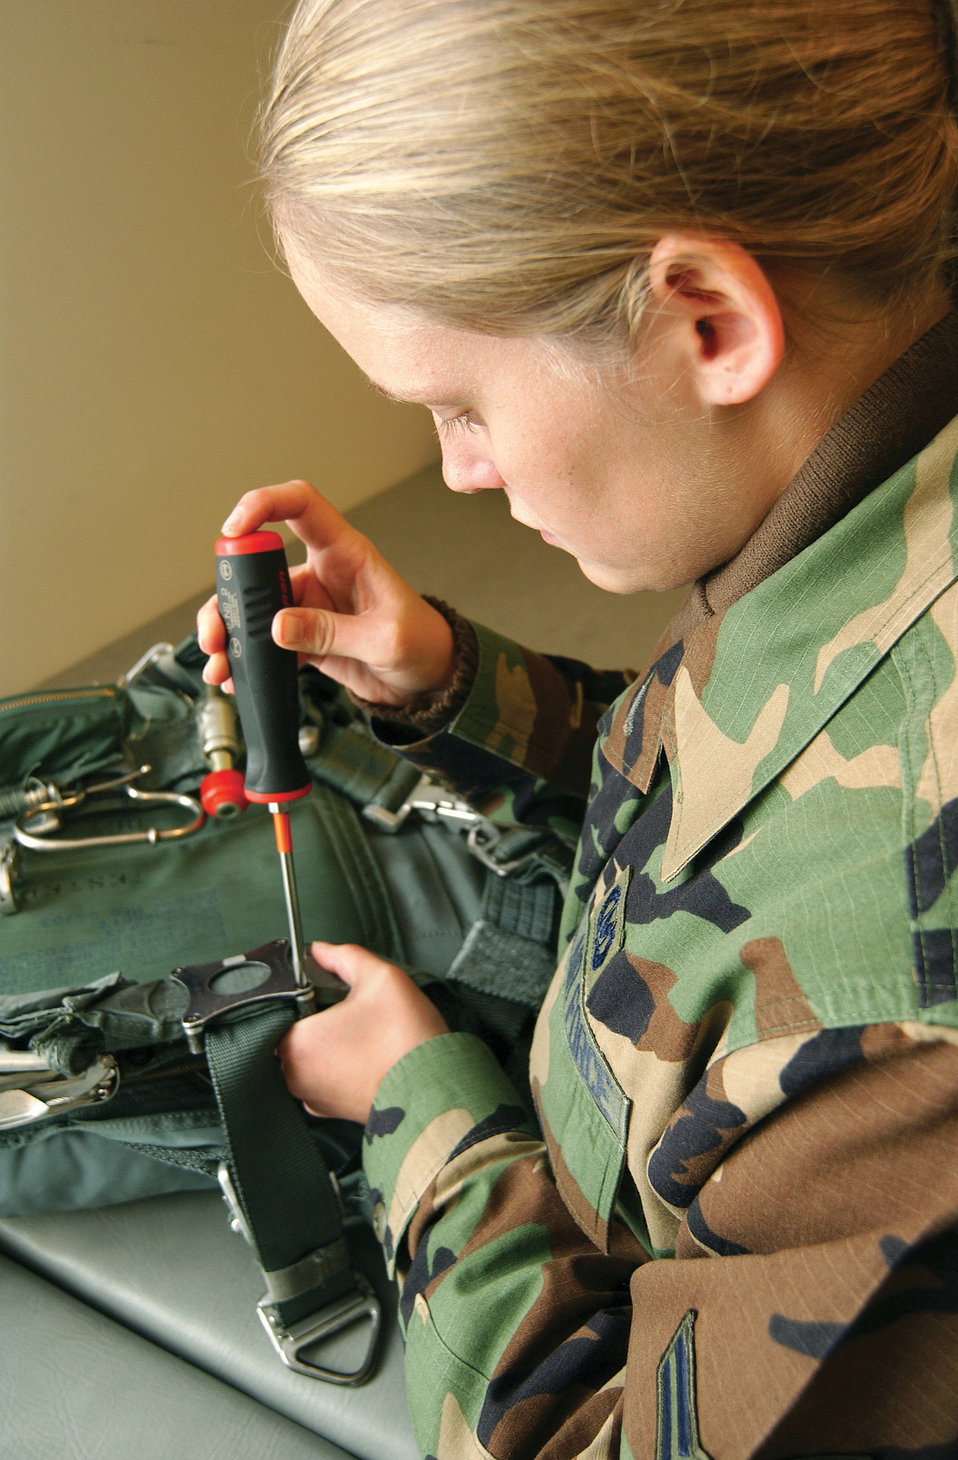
Parachute repair

MCCHORD AIR FORCE BASE, Wash. -- Airman 1st Class Crystal Lamonda performs an inspection on a parachute here recently. Airman Lamonda is an aircrew life support technician assigned to the 62nd Operation Support Squadron